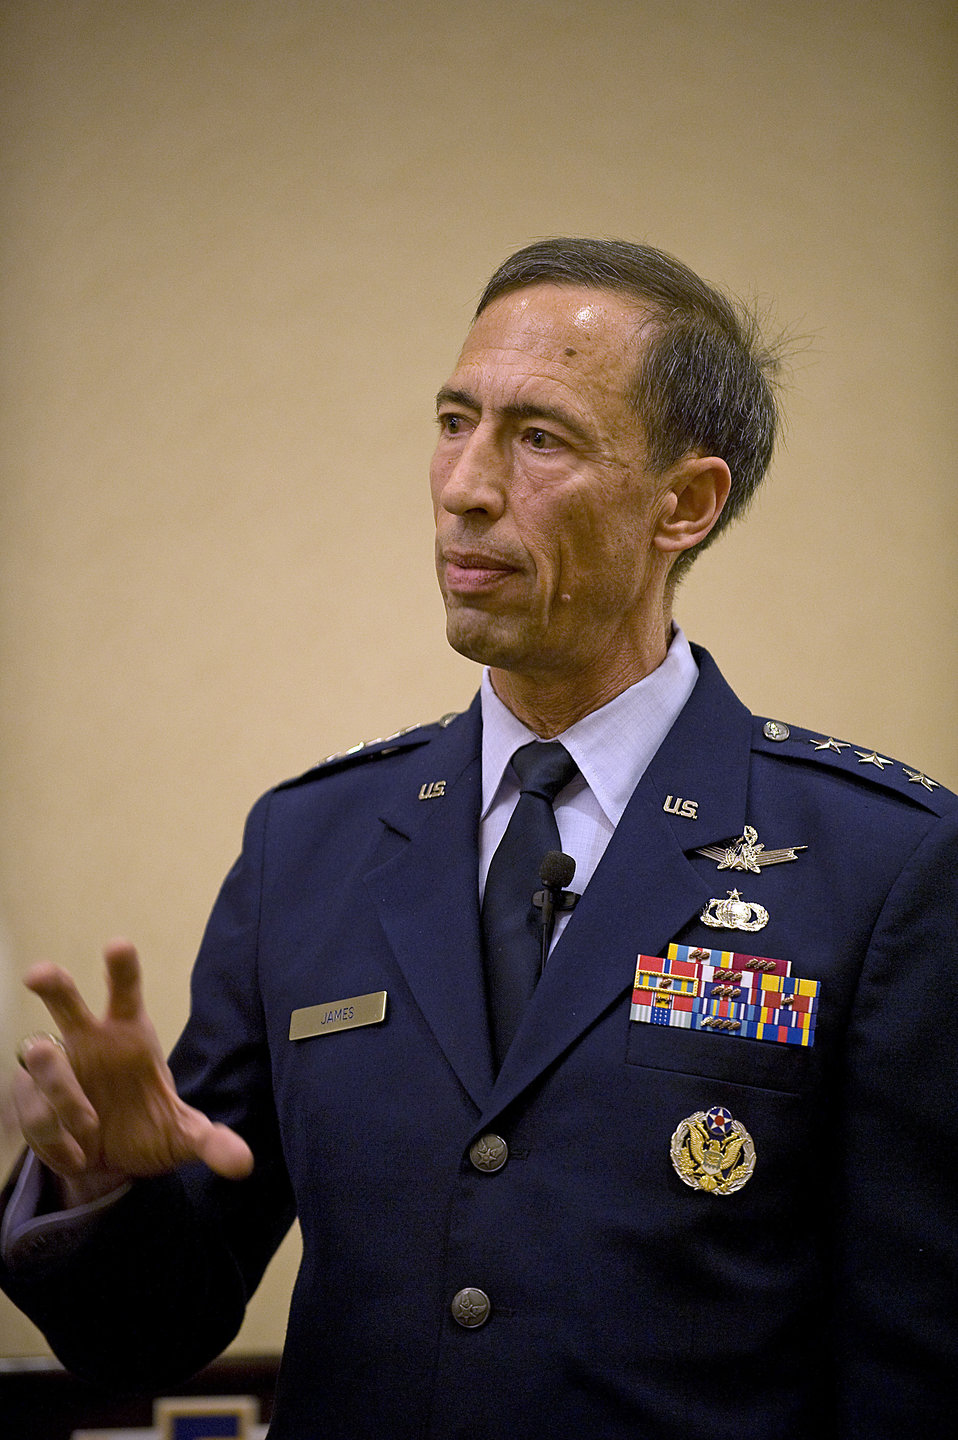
Air Force leader talks about future of ISR

Lt. Gen. Larry D. James speaks April 26, 2012, during the Air Force Association breakfast at the Crystal City Marriott, Va. The AFA breakfast program is a monthly series that provides a venue for senior Air Force and DOD leaders to communicate directly with the public and the press. James is the deputy chief of staff for ISR at Headquarters Air Force.